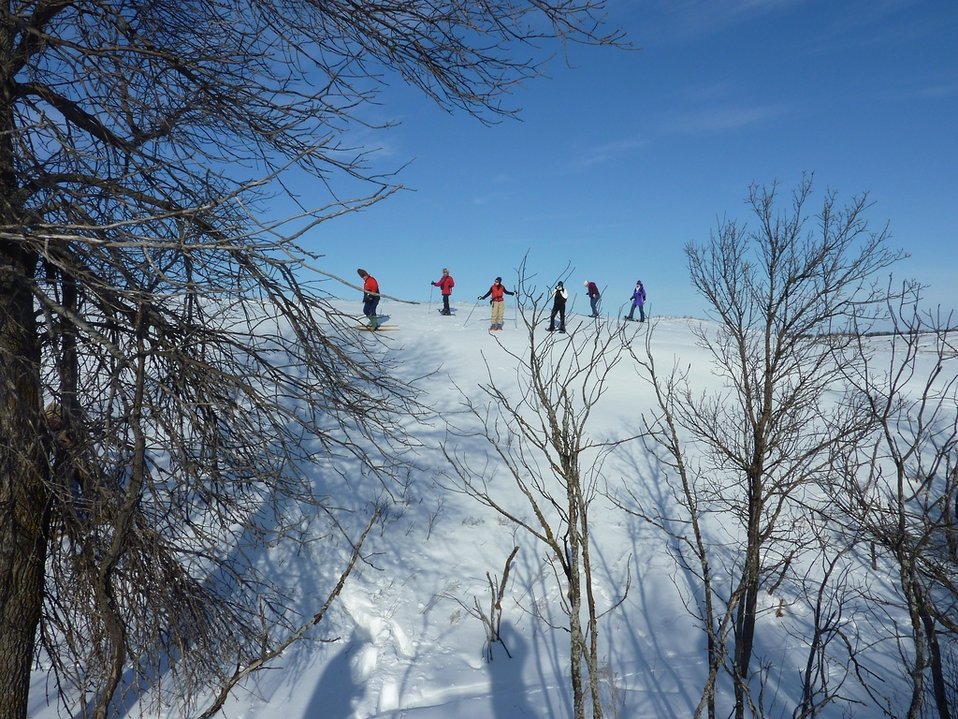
Heading down

At Des Lac Refuge, ND, a skier and snowshoers take on a hill.